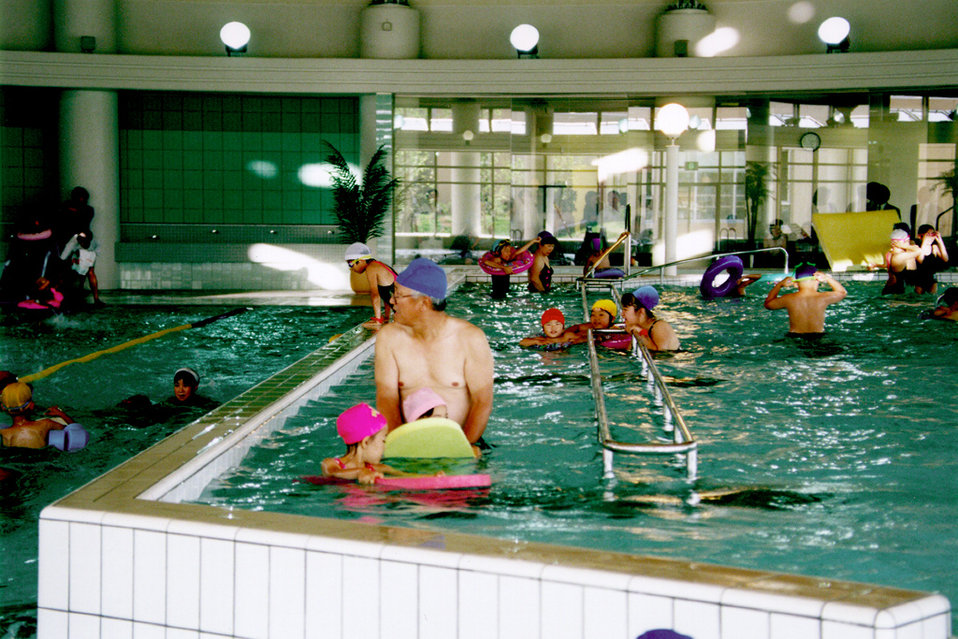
This is one of a series of three photographs (PHIL# 9096 - 9098), which revealed the interior of a large indoor publicly-accessible swimming pool that provided an elegant ramped access into the pool, steps, and a transfer ledge that enclosed the pool at its edge. In this particular image, a group of adults and children were frolicking about in, and around the pool. Note the in-pool, partially submerged handrail, which allowed both the physically-impaired and non-impaired swimmers, to grab on for support while swimming. This collection from the Center for Universal Design's Universal Exemplars, is from the Chou Silver Zone Complex located in Akita Prefecture in Northern Japan. The pool allowed people the ability to make personal choices in how they entered and exited the pool, according to their comfort and safety levels. Taking physical impairments into account during the designing of such a facility only enhanced the enjoyment of all who visited this recreation area.